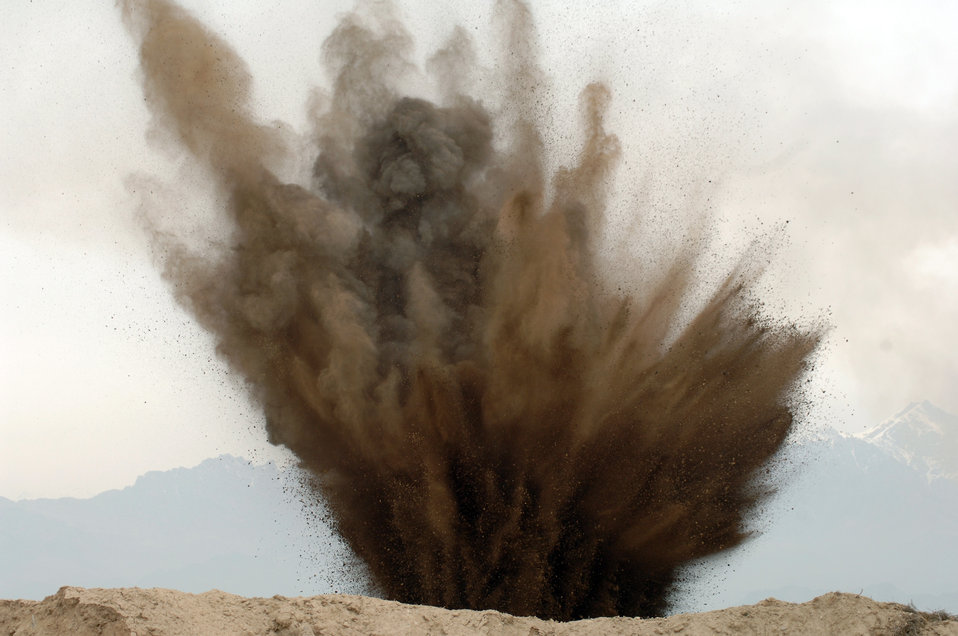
UXO disposal

Dirt and fragments fly into the air as a 1,100-pound Russian bomb is disposed of 200 feet from the runway at Bagram Air Base, Afghanistan, on Thursday, March 30, 2006.